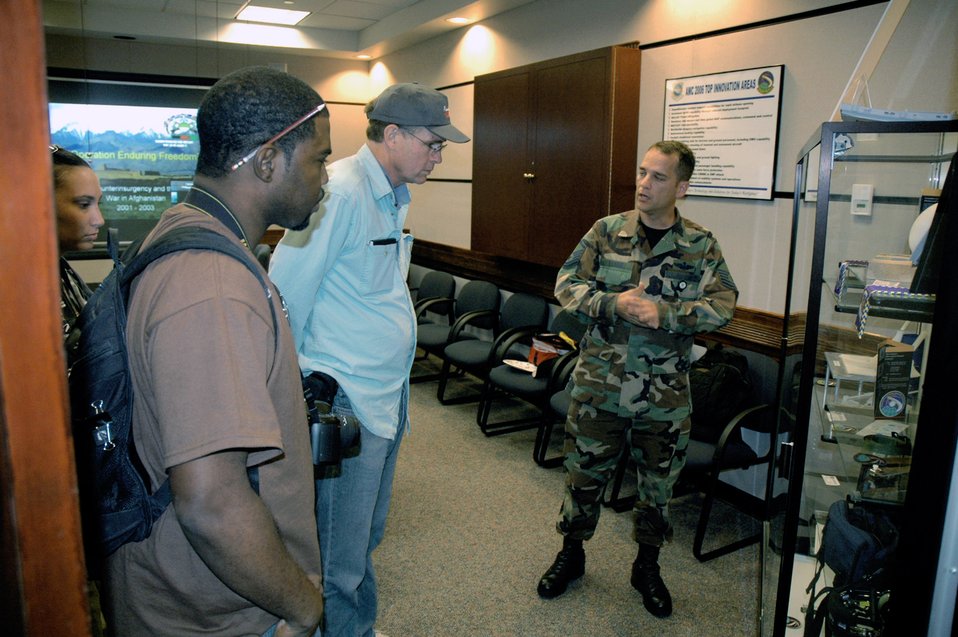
Air Force Art Program artists visit USAF EC

Master Sgt. Michael Harris describes some battlelab initiatives to Tatiana El-Khouri, Steven Wright and John Finger -- all artists participating in an official visit to the USAF EC as part of the Air Force Art Program. During a three-day visit, the artists saw the armory, the center campus and in-the-field training for Phoenix Warrior and Eagle Flag courses. Sergeant Harris is assigned to the U.S. Air Force Expeditionary Center's Air Mobility Battlelab.